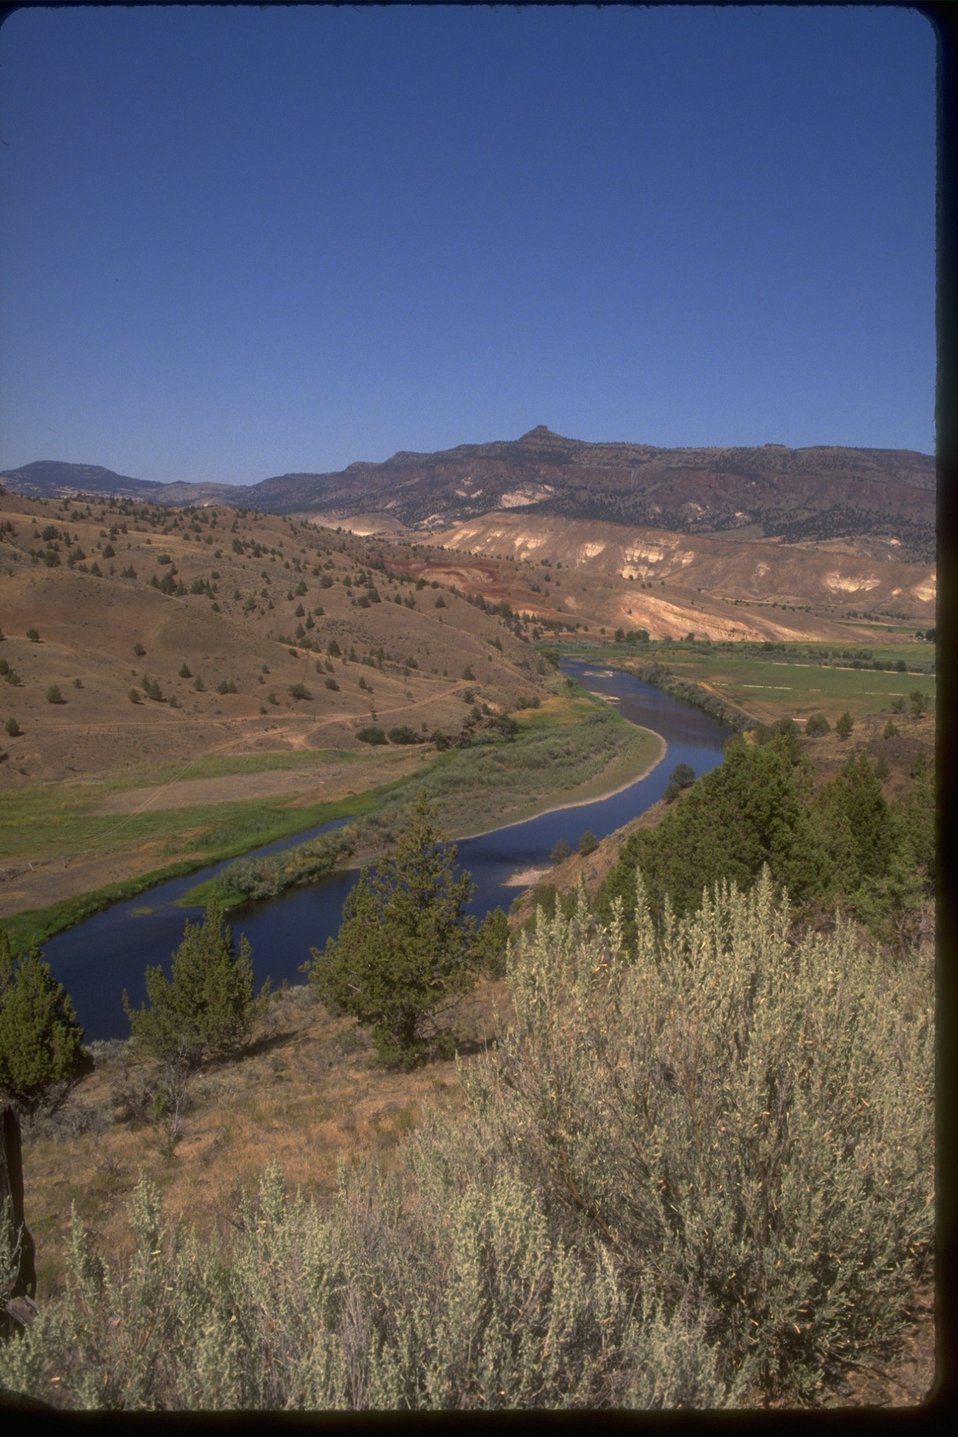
John Day River Area.